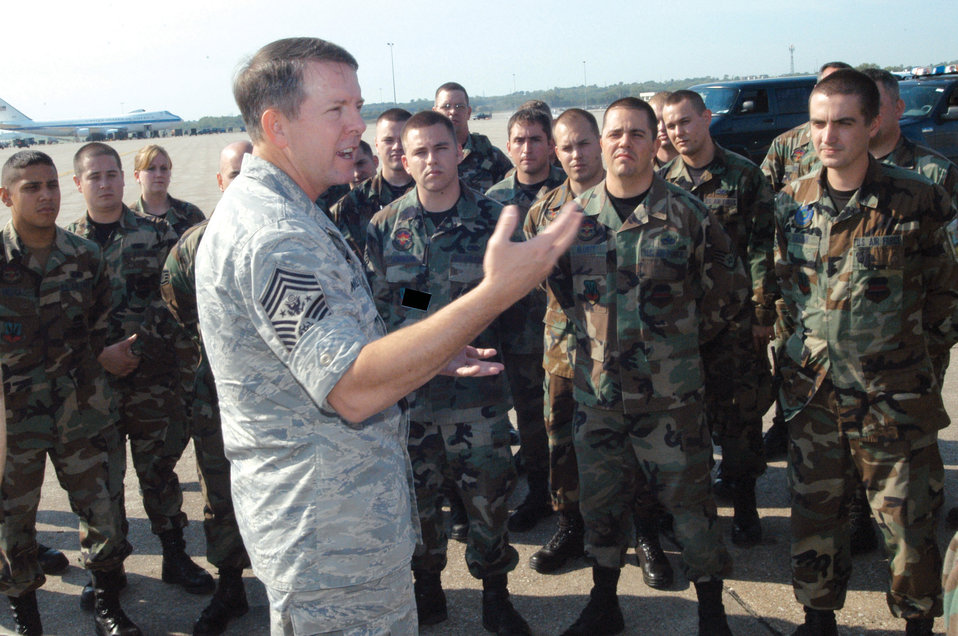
Two new programs guide enlisted force shaping

Chief Master Sgt. of the Air Force Rodney J. McKinley speaks to Airmen from Offutt Air Force Base, Neb., in September. Air Force officials announced Oct. 16 two additional enlisted programs to help support current force shaping efforts to reduce 40,000 active-duty Airmen. Chief McKinley stressed Airmen should fully understand the opportunities and implications of the force shaping initiatives.